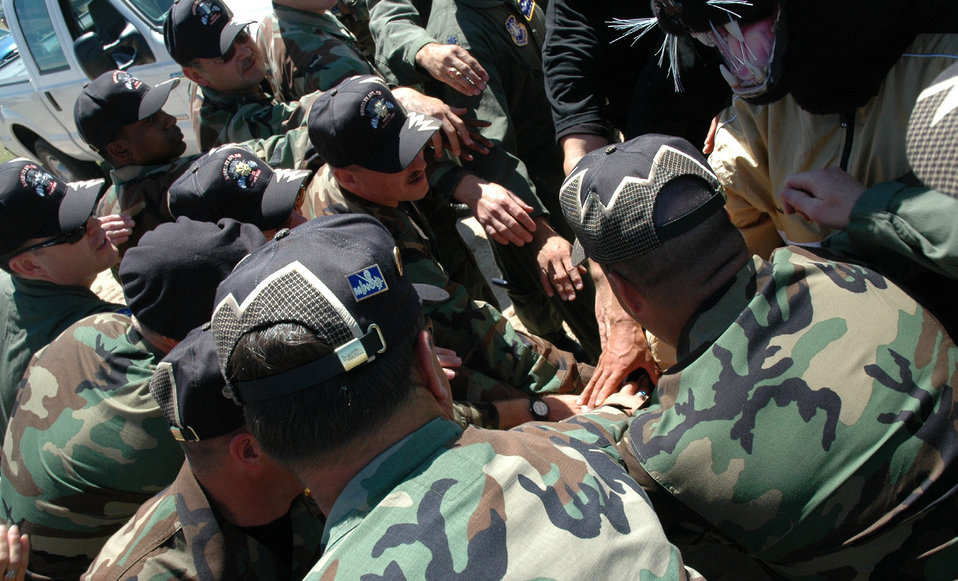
Guardian Challenge teams reach finish line

Guardian Challenge participants from the 460th Space Wing at Buckley Air Force Base, Colo., cheer their defender team after the obstacle course competition Aug. 16.